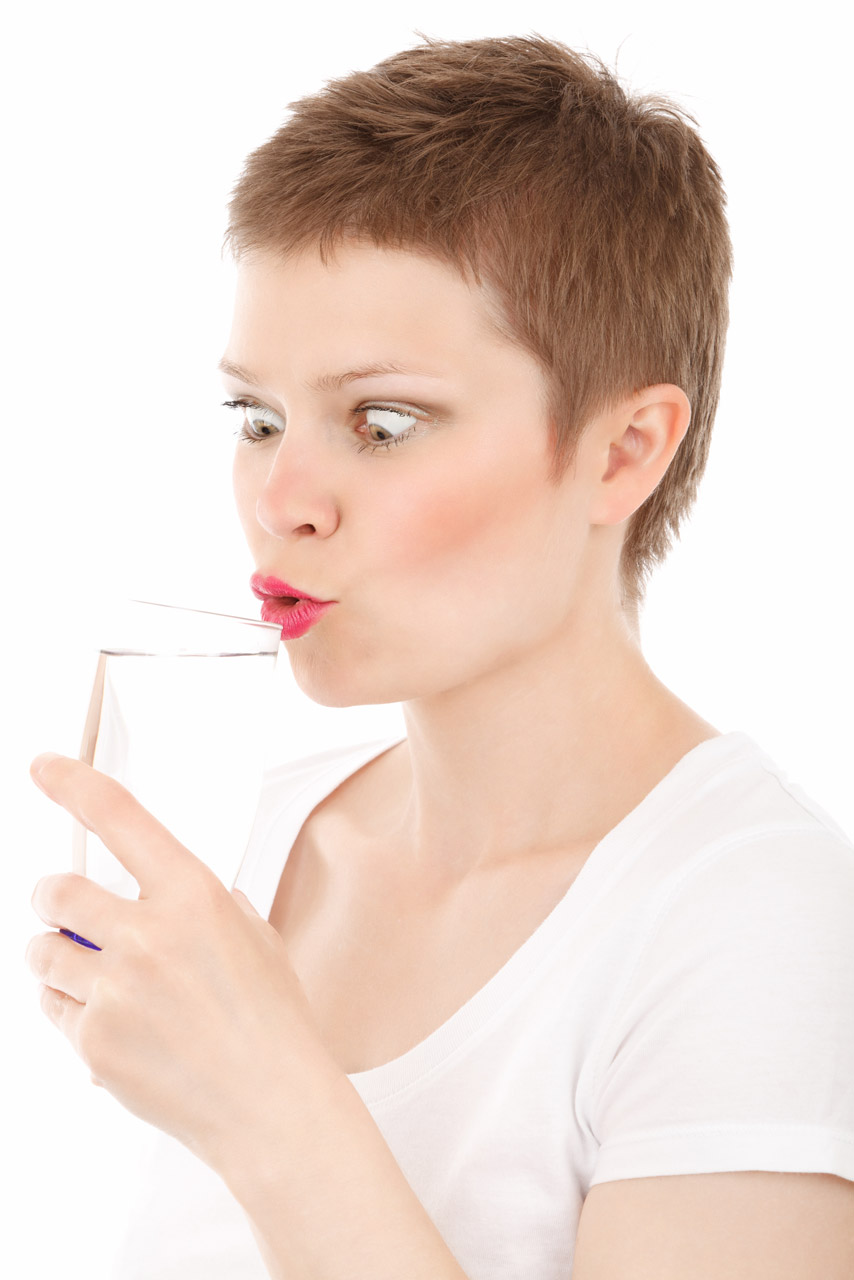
Thirsty young woman drinking a glass of cold water isolated on white background.